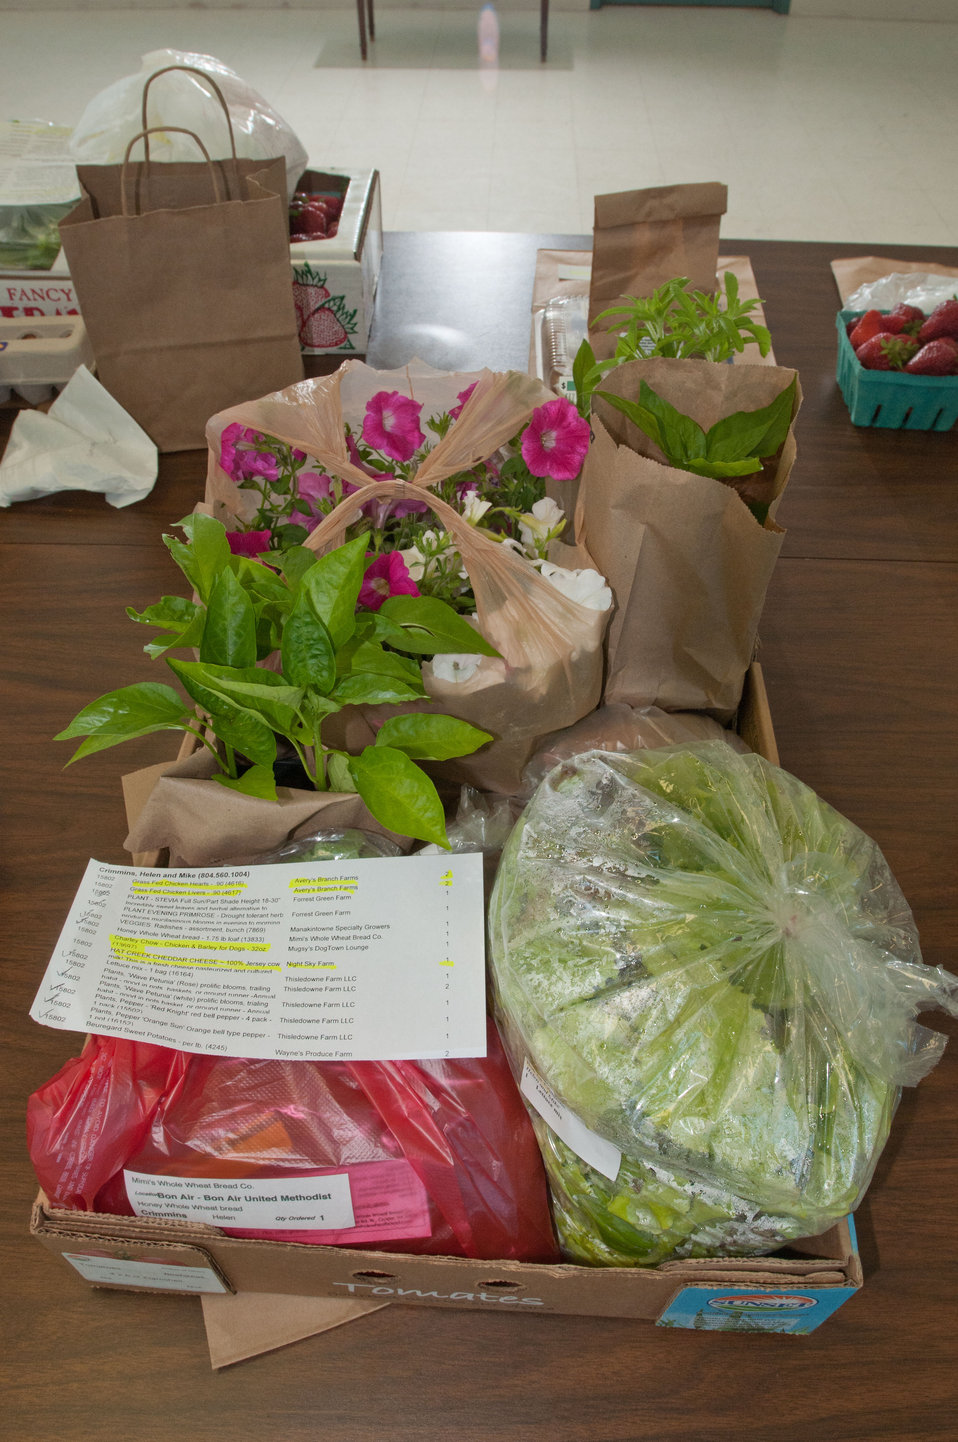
Customized orders at the Bon Air United Methodist Church pick-up point, in Richmond, VA, are the main difference between Fall Line Farms food hub and traditional food cooperatives (that provide identical orders) on, Thursday, May 5, 2011. This is one of several pick-up points in the Richmond area that are open every Thursday afternoon. This local food hub offers a wide variety of household food staples and specialty items. Members can pick their customized orders from an ever changing inventory of fruits, vegetables, meats, soaps, eggs, cheeses, flowers, honey, pastas, sauces, syrups, baked goods, mushrooms, flour and grains. Suppliers post what they have on a Lulus Local Food online listing and customers can make their selection. Every Thursday suppliers deliver orders to, one of several pick-up points, designated by the customers in or around the Richmond area.